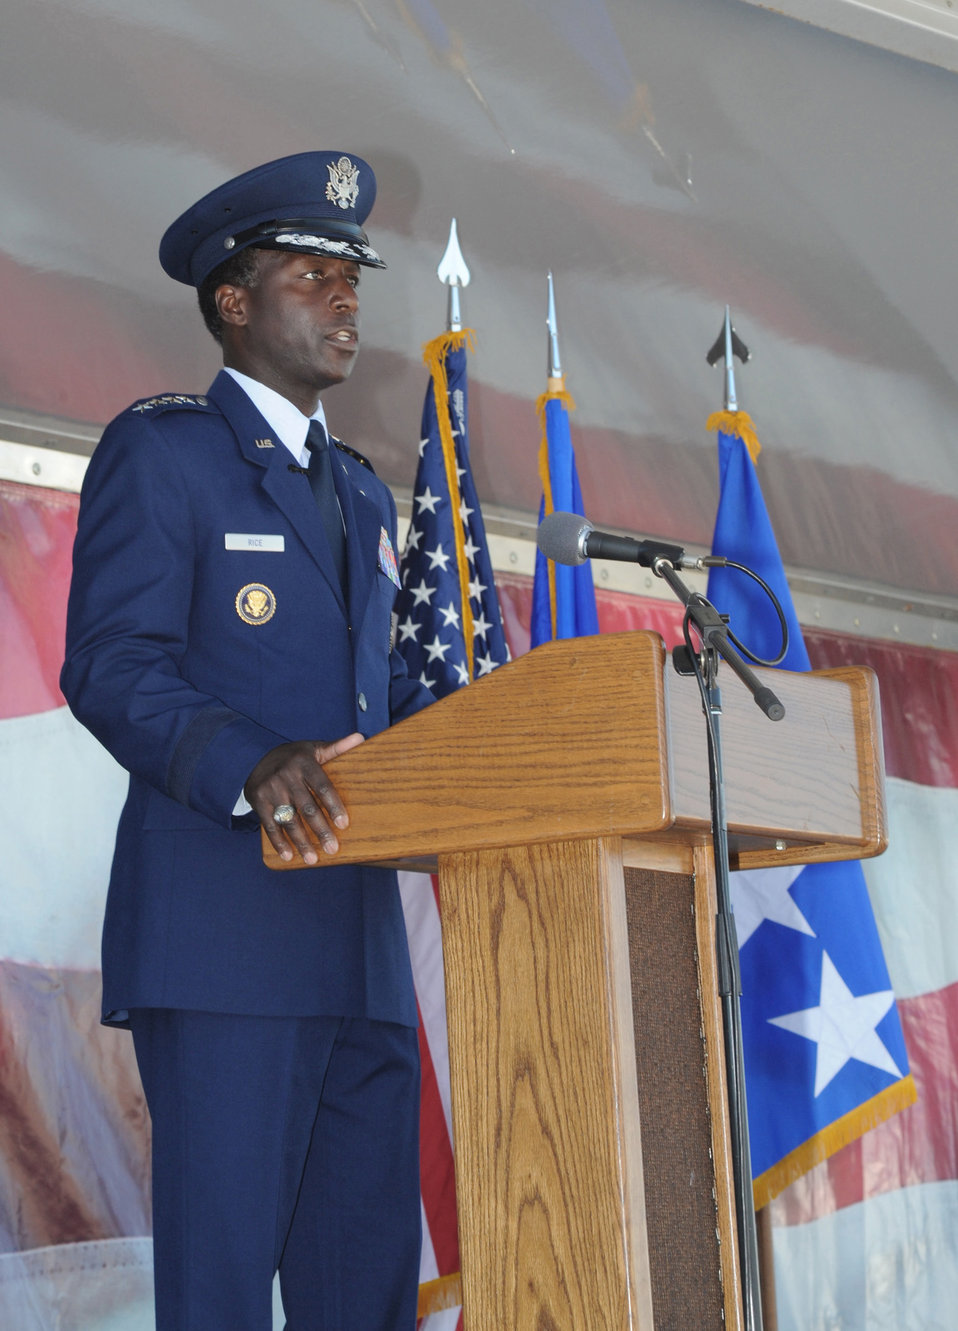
New AETC commander

Gen. Edward A. Rice Jr., the commander of Air Education and Training Command, addresses the audience during a change of command ceremony Nov. 17, 2010, at Randolph Air Force Base, Texas. General Rice succeeded Gen. Stephen R. Lorenz as AETC commander.